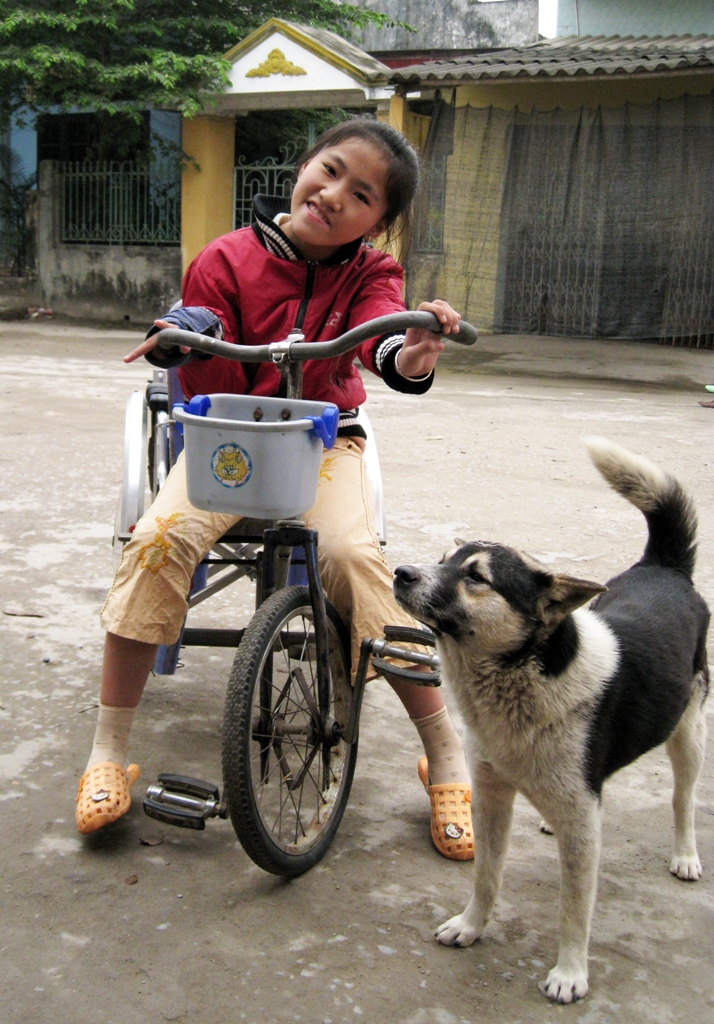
USAID assists persons with disabilities in Vietnam